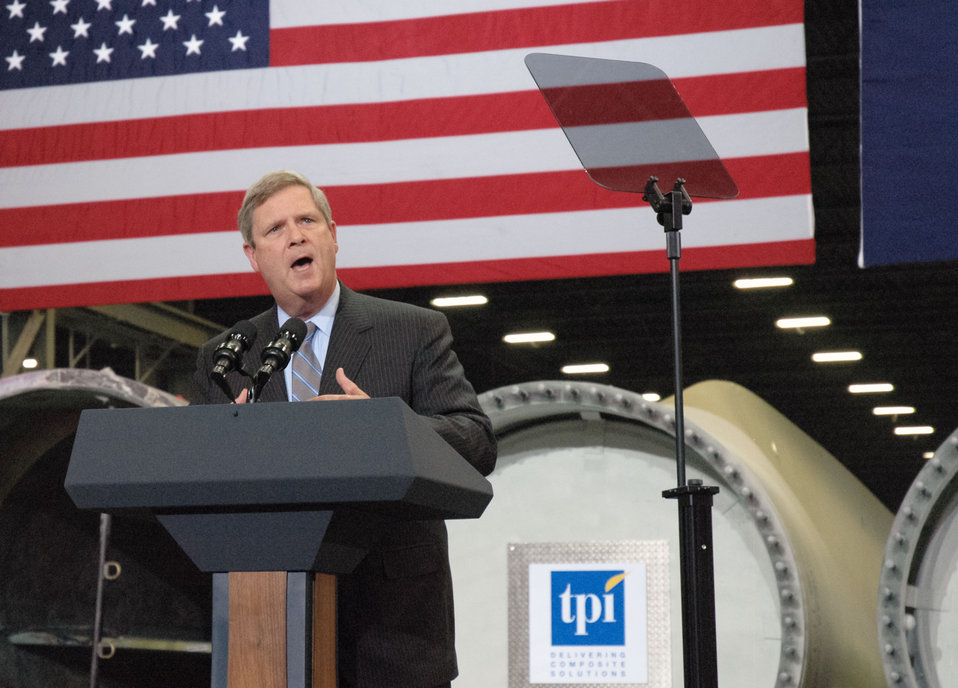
Agriculture Secretary Tom Vilsack speaks to a crowd of about 500 people at TPI, a maker of wind turbine blades that employs 700 people at its Newton, Iowa plant on Thursday, May 24, 2012.